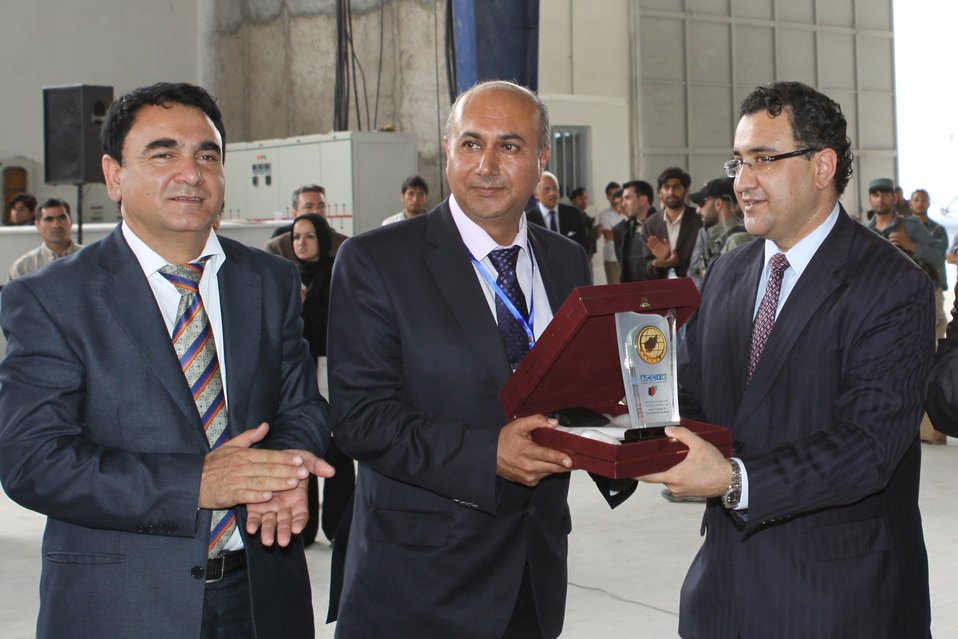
100525 Hirat Marble Conference 473